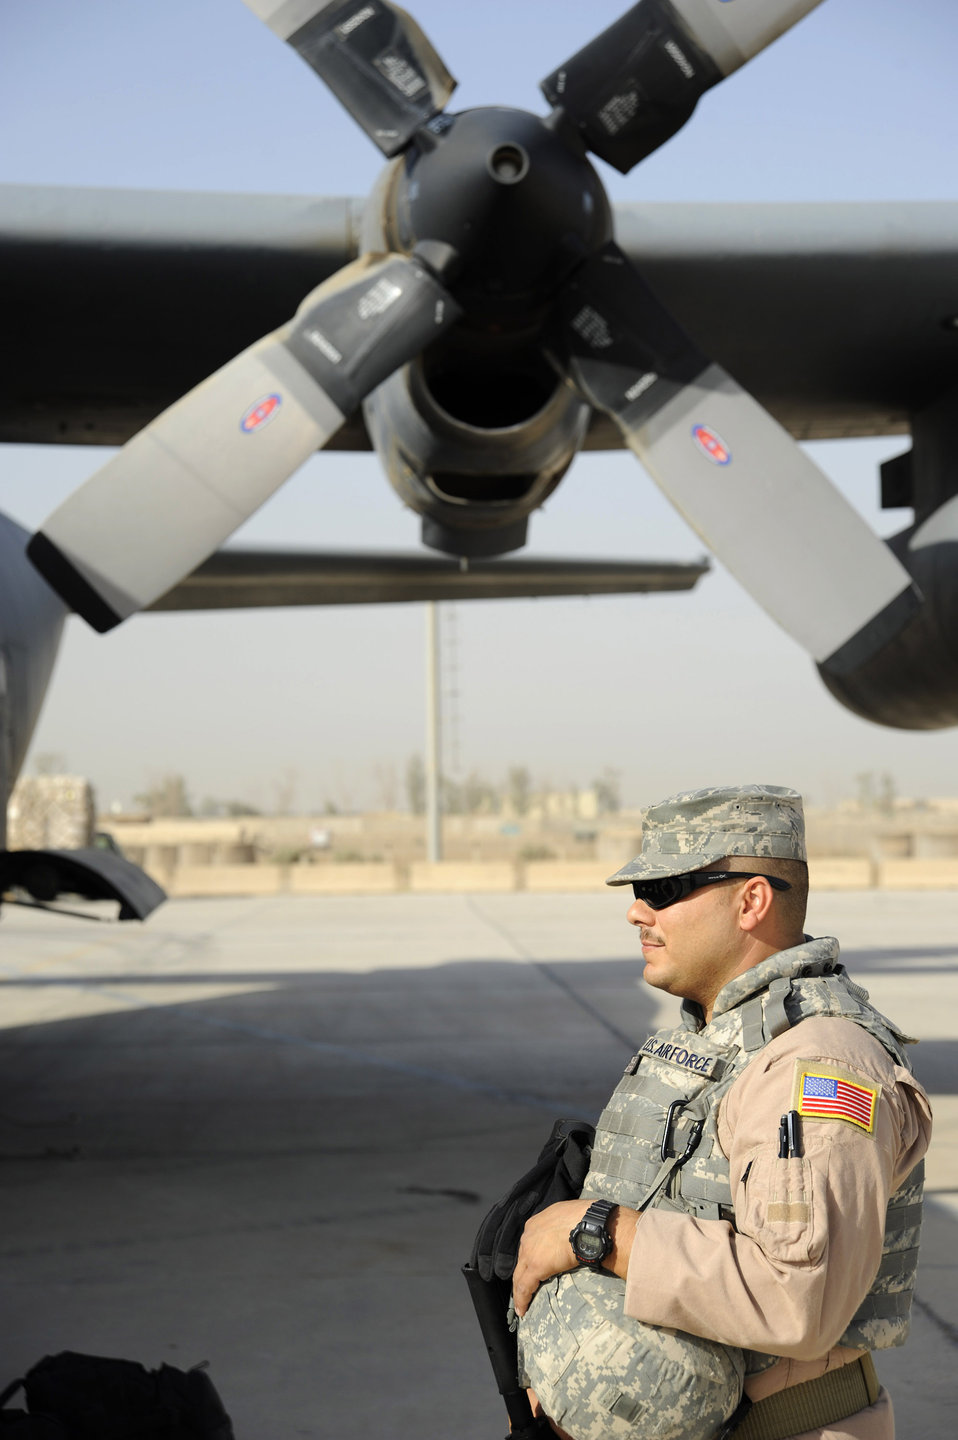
Iraqi relief

Master Sgt. Alex Diaz waits to board an Iraqi C-130 at Sept. 22 at an air base in Iraq. Sergeant Diaz is assigned to the an air advisor for the 370 Air Expeditionary Advisory Squadron and deployed from the 50th Airlift Squadron from Little Rock Air Force Base, Ark.